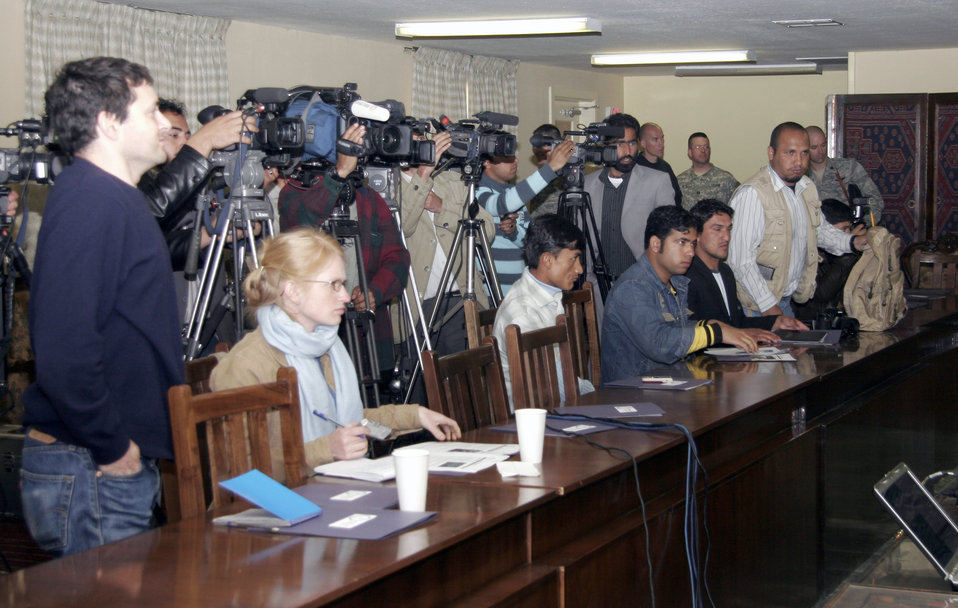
Bagram Media Days

Afghan media record Lt. Gen. Gary North, Combined Forces Air Component commander for Southwest Asia, as he answers questions at his news conference during